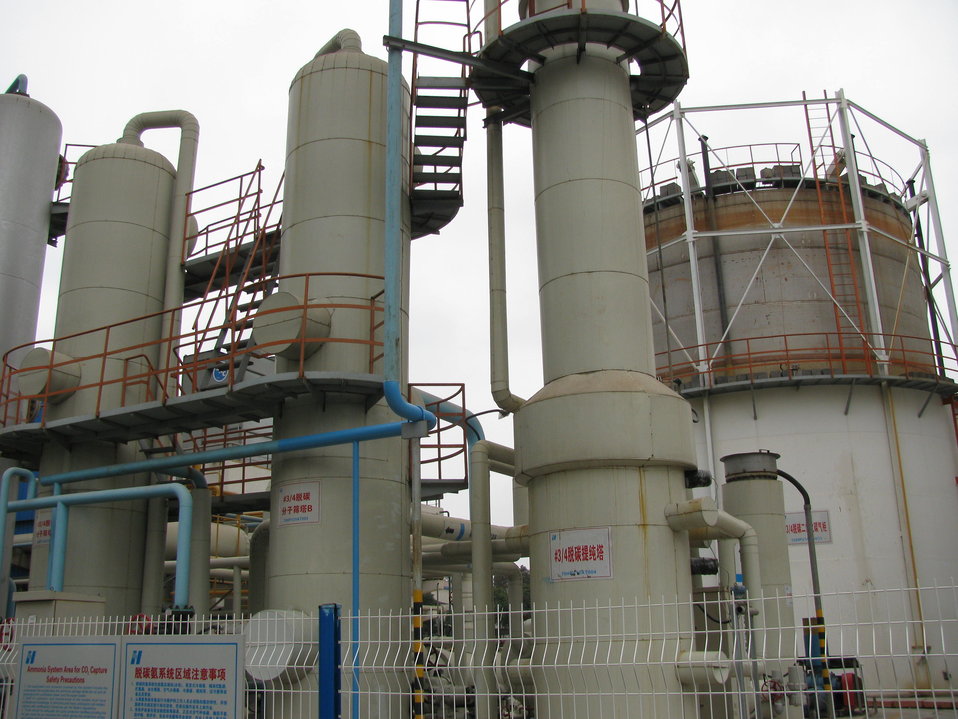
Shanghai 012